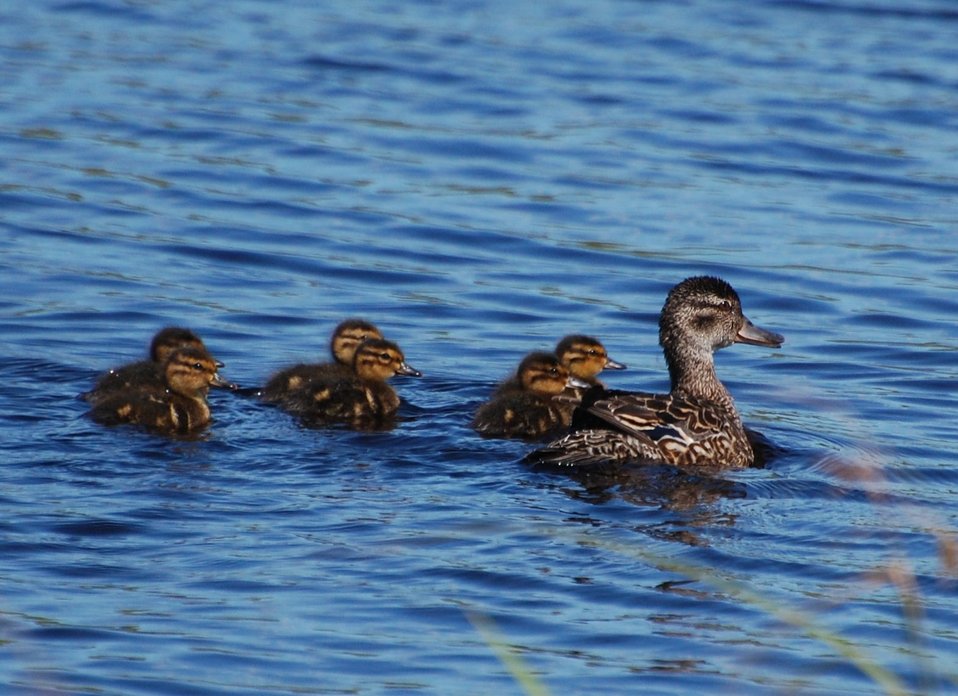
Green-winged Teal

Izembek National Wildlife Refuge